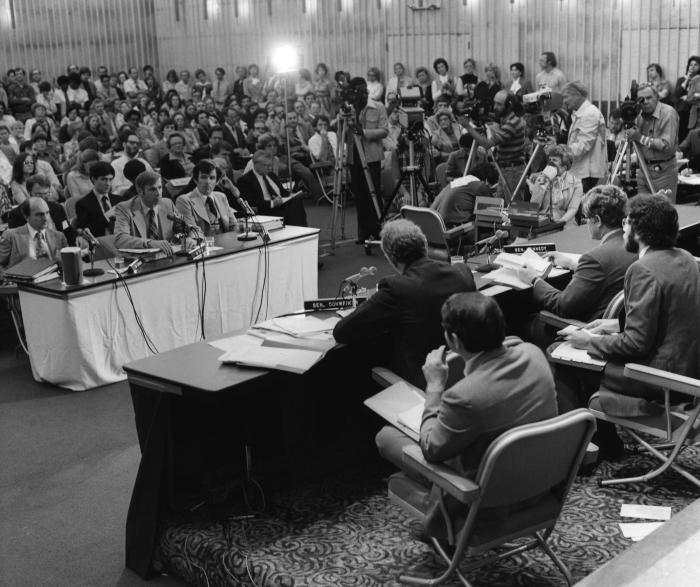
This November 9, 1977 photograph was taken during a senate hearing on the Centers for Disease Control's handling of the 1976 Legionnaires' disease outbreak.